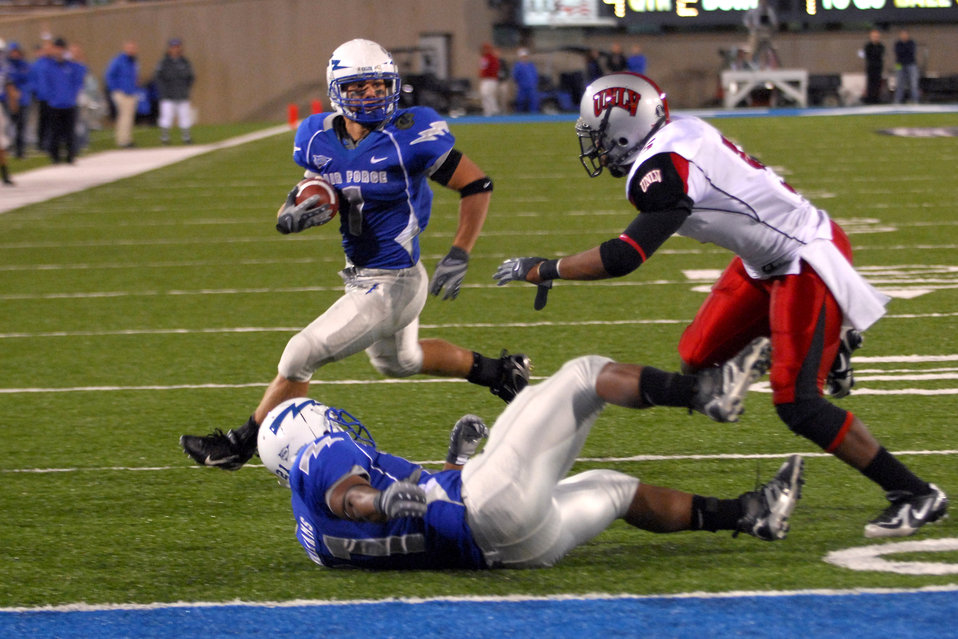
Falcons back on winning track, 31-14

Air Force senior Chad Hall gets a block by Ryan Williams on UNLV's Mil'Von James to score on an 8-yard touchdown run Oct. 6 in the bluesuiters 31-14 win over the Rebels at Falcon Stadium.